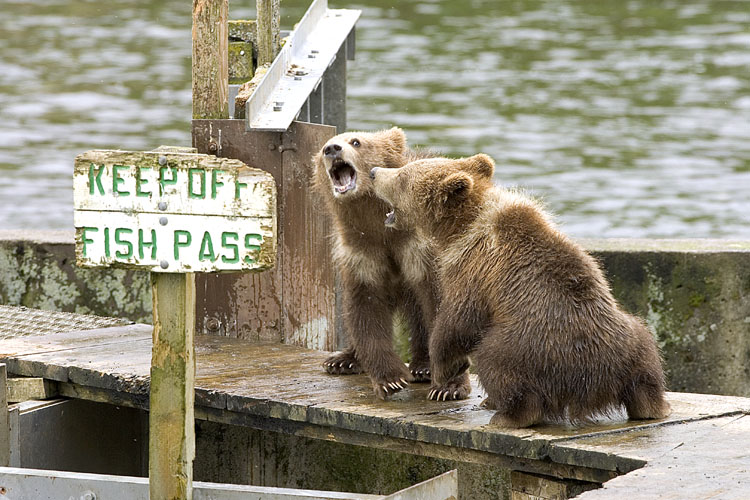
KOD Hildebrand (49)

Kodiak National Wildlife Refuge- Wildlife